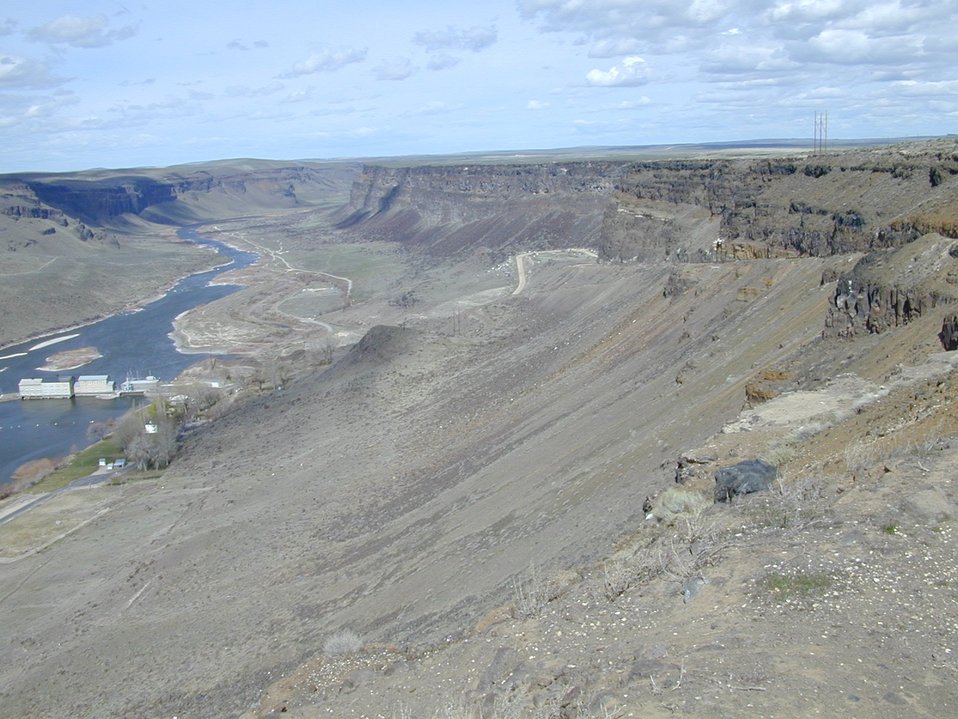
Scenic Snake River Birds of Prey National Conservation Area Lower Snake River District LSRD Snake River Canyon